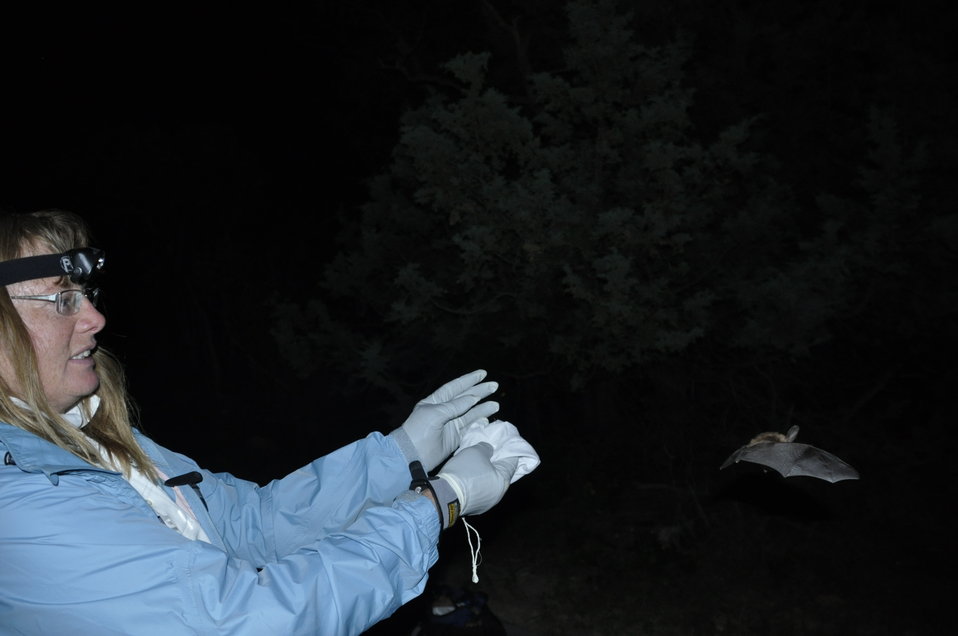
Wildlife biologist releases bat

Biologist releases bat